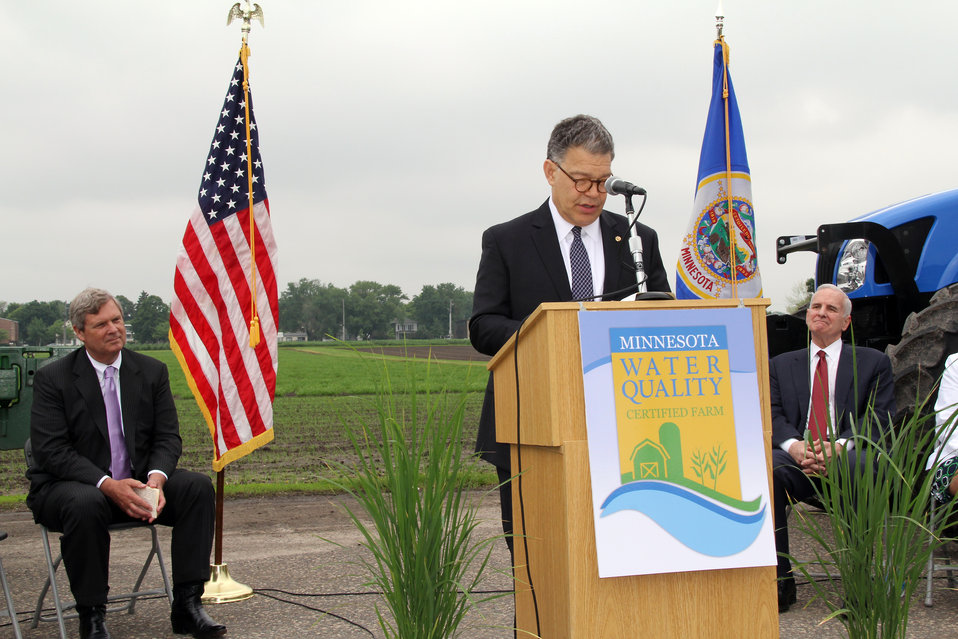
U.S. Senator Al Franken (MN) speaks at the launch of the Minnesota Agricultural Water Quality Certification program held at St. Paul University, St. Paul, MN on Monday, Jun. 10, 2013. This program is the first of its kind in the nation and is the product of a state-federal Memorandum of Understanding (MOU) signed by Minnesota Governor Dayton, Agriculture Secretary Vilsack and former Environmental Protection Agency (EPA) Administrator Lisa Jackson in January 2012.